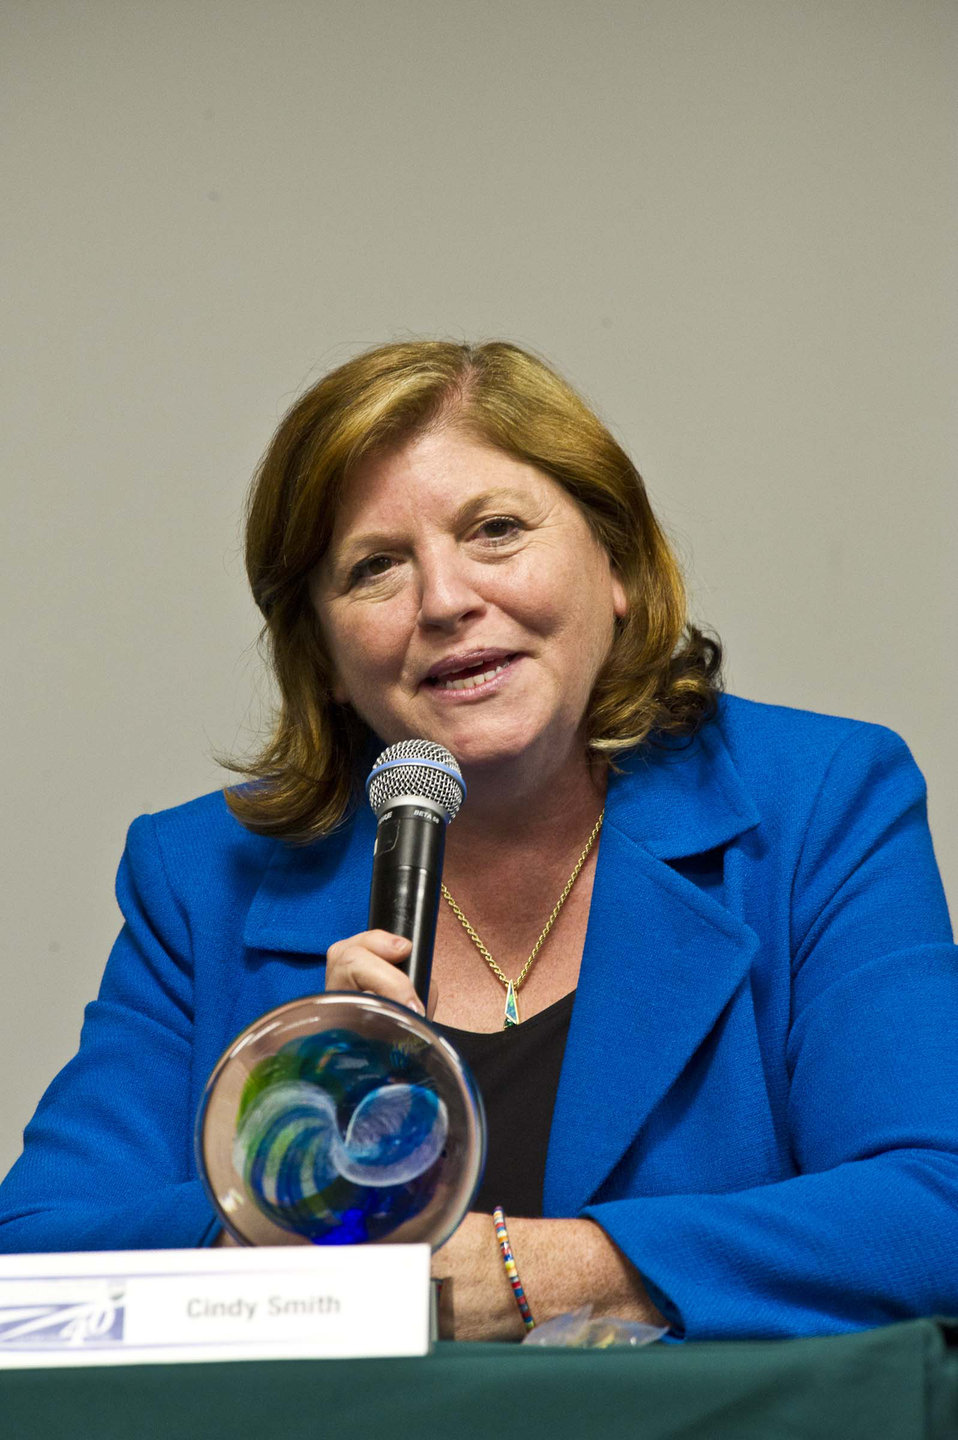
Former U.S. Department of Agriculture (USDA) Animal and Plant Health Inspection Service (APHIS) Administrator Cindy Smith (2007-2011) participates in a panel discussion at the 40th anniversary celebration of APHIS on May 16, 2012.